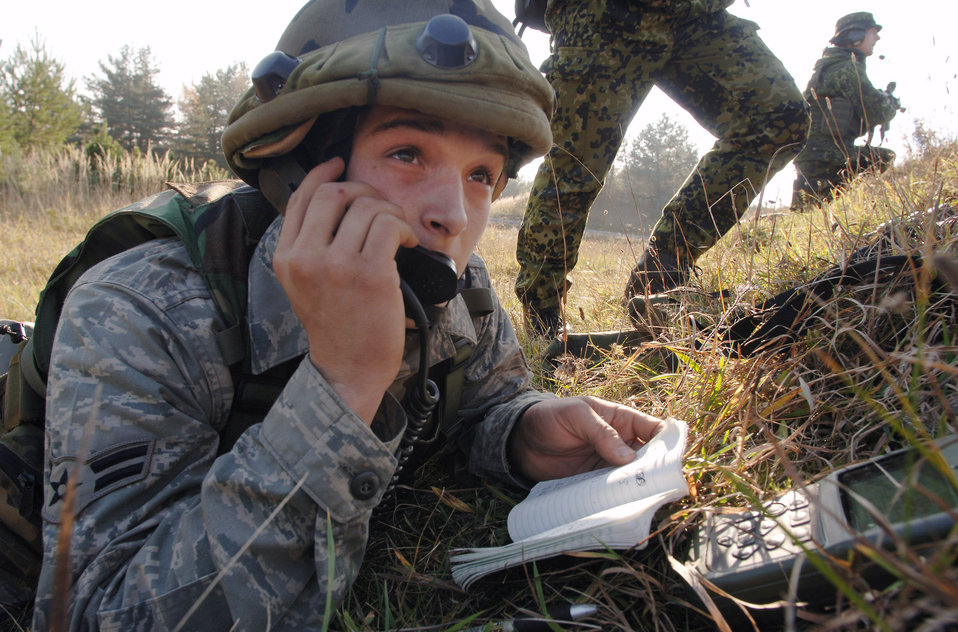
Forward air controllers prepare for war

Airman 1st Class Michael Kelly assists Danish soldiers by relaying the location of a target for an F-15E Strike Eagle pilot during a close-air-support scenario for Exercise Allied Strike II Nov. at Grafenwoehr U.S. Army Garrison, Germany. The week-long joint terminal air controller-centric exercise involves 90 U.S. and coalition personnel with close-air-support assets from five U.S. and coalition air wings and is designed to prepare U.S. Air Forces Europe and NATO JTACs for Operation Iraqi Freedom and Operation Enduring Freedom. Airman Kelley is a radio operator maintainer and driver assigned to 1st Air Support Operations Squadron in Wiesbaden, Germany.